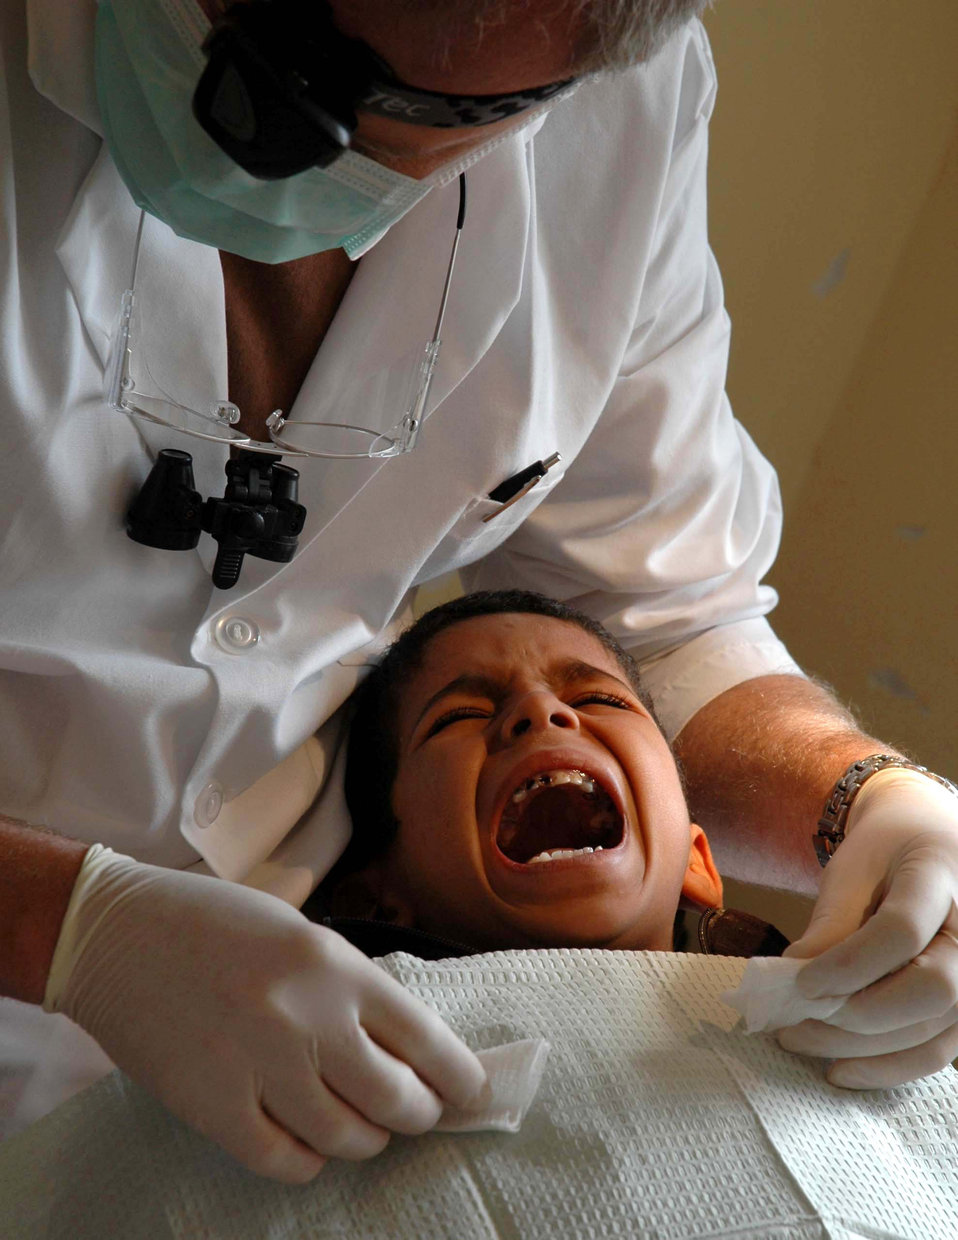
Open wide

A small boy reluctantly opens his mouth for Maj. Brent Dupper as the major prepares to work on the boy's teeth during humanitarian assistance Exercise African Lion April 23 in Morocco.